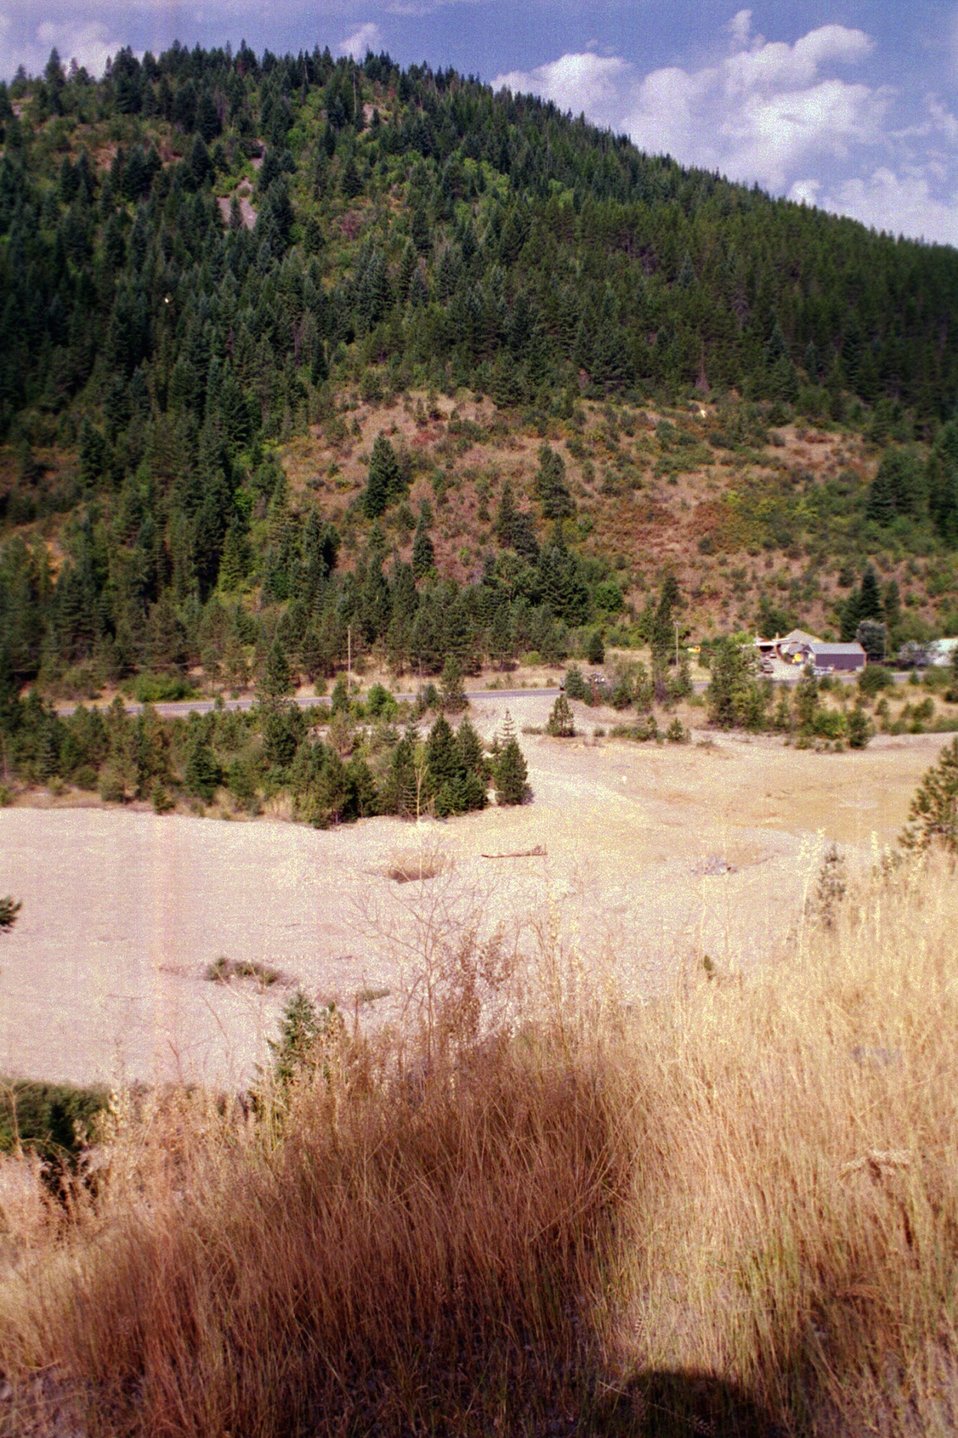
Riparian Area Stream Restoration from mining damage near Pinecreek Couer D'Alene Field Office UCSC Upper Columbia Salmon Clearwater District